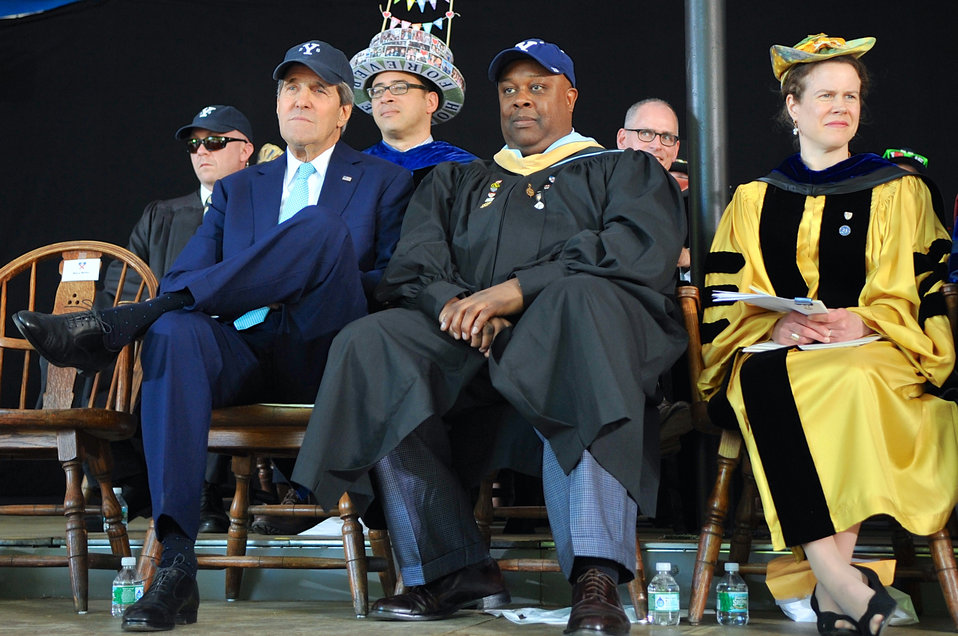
Secretary Kerry Dons 1966 Yale University Hat After Delivering Class Day Remarks

U.S. Secretary of State John Kerry sports a 1966 Yale University baseball hat, commemorating the year he graduated, as he listens to ongoing remarks after delivering the school's 2014 Class Day address in New Haven, Connecticut, on May 18, 2014.